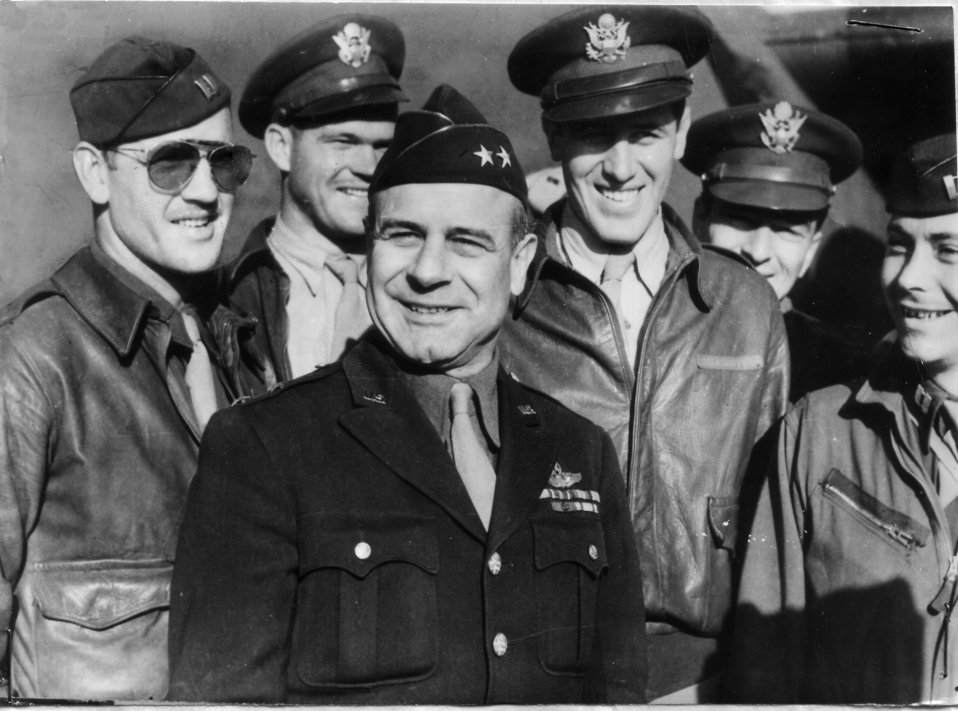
Doolittle's Raid

Lt. Gen. James H. Doolittle (center), commander of the Army Air Forces Eighth Air Force, is surrounded by a group of U.S. flyers. (This picture was taken before his promotion to lieutenant general.) The general took part in the first raid on Tokyo on April 18,1942, when a squadron took off from the USS Hornet in the North Pacific Ocean to bomb military installations in Japan.